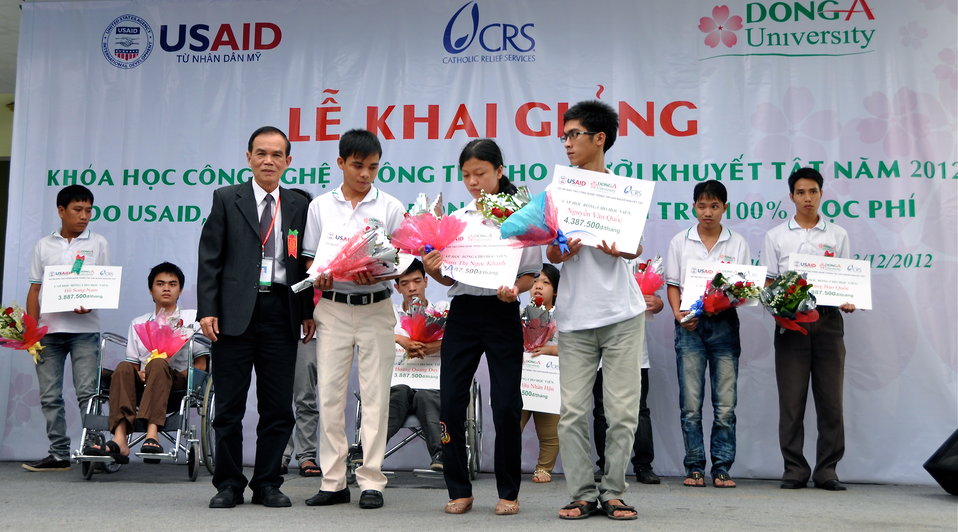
New class of students starts at Dong A Univeristiy with support from USAID and CRS

Photo: @USAIDVietnam
December 3, 2012